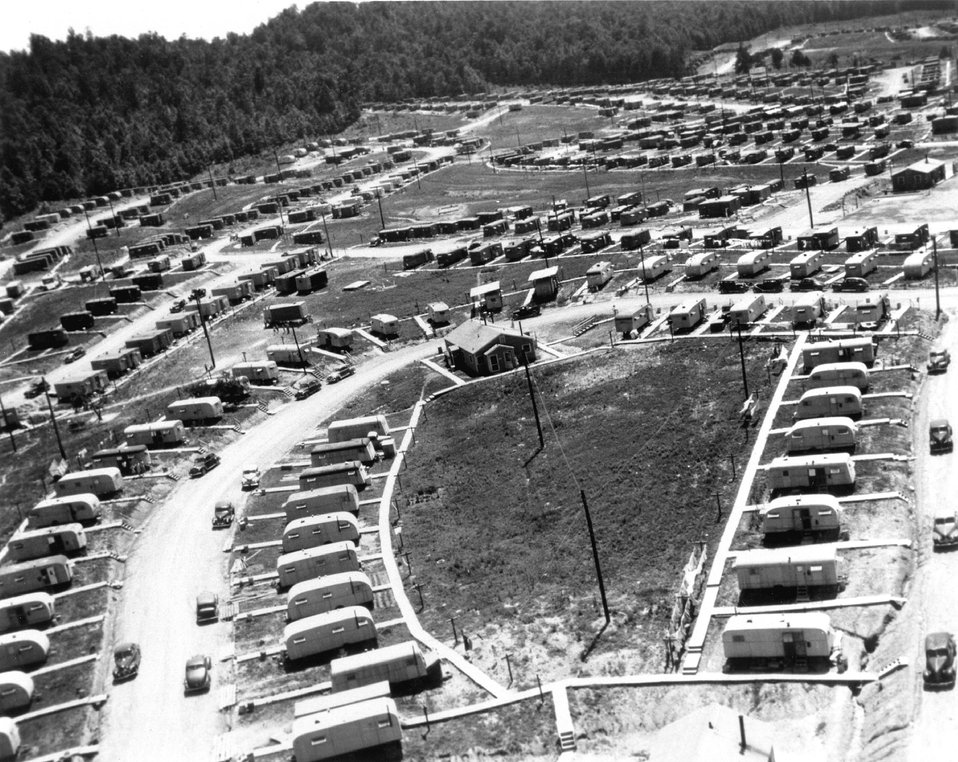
Aerial view of trailer park. c. 1945